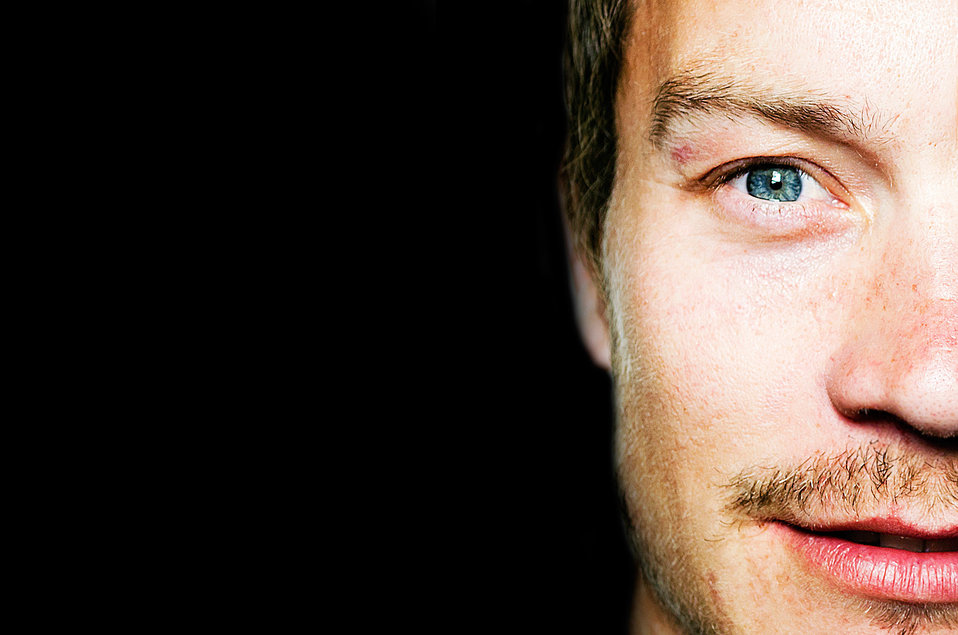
Man - portrayal.